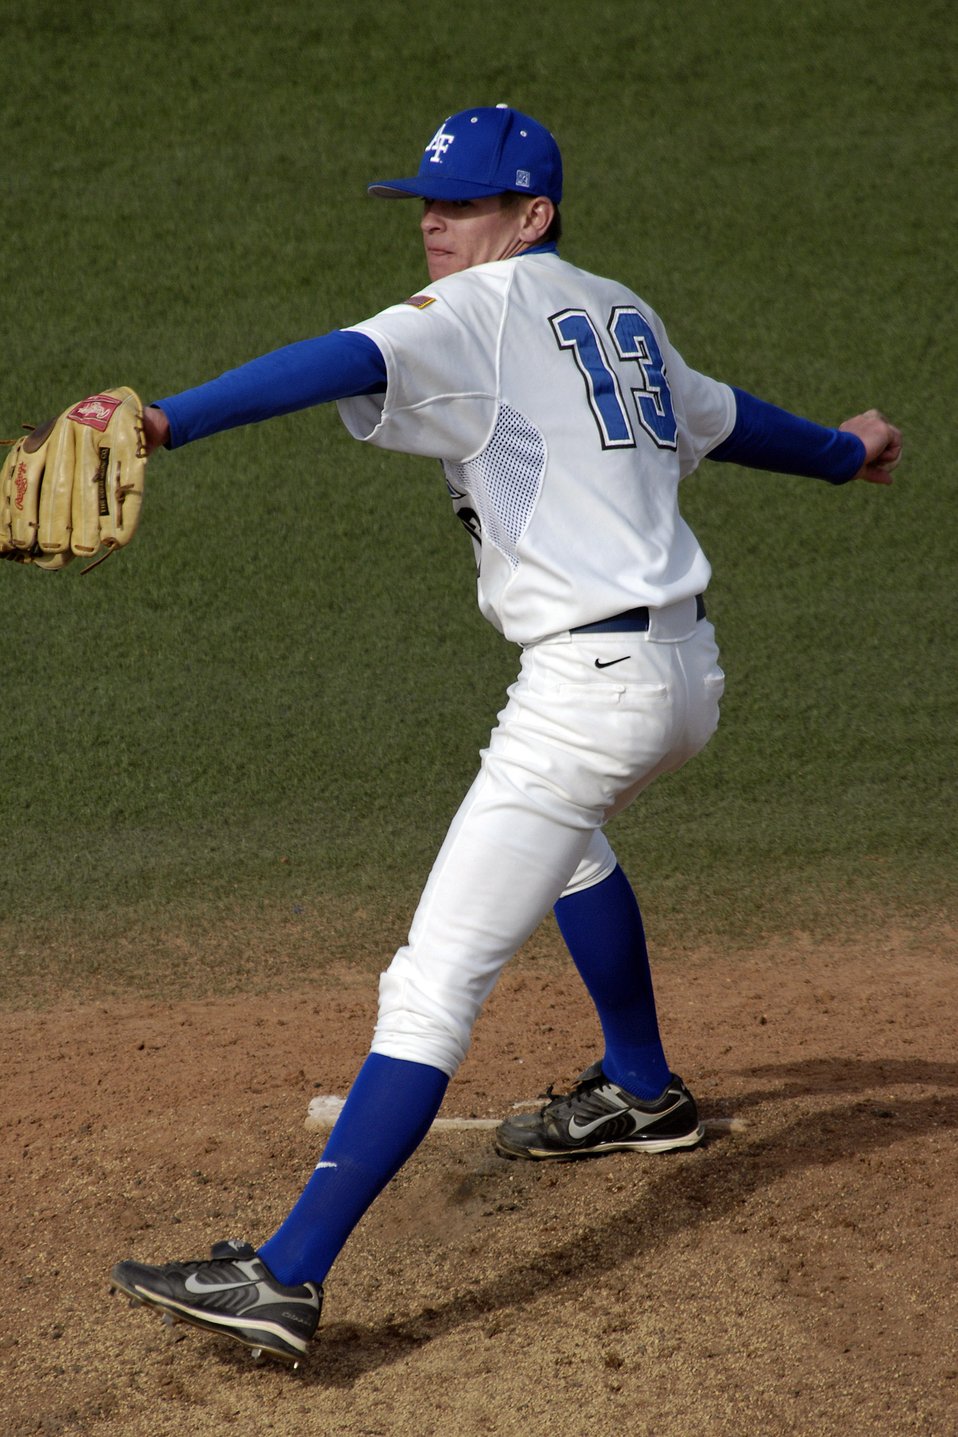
Air Force Rallies To 10th Inning Win Over Colorado Christian

Freshman Greg Laswell pitches in relief as the Falcons rallied to a 10th inning 9-8 win against Colorado Christian in non conference baseball action at the Academy's Falcon Field. Air Force tallied 12 hits and did not commit an error in the field on the day. The Falcons improve to 11-19 on the season.